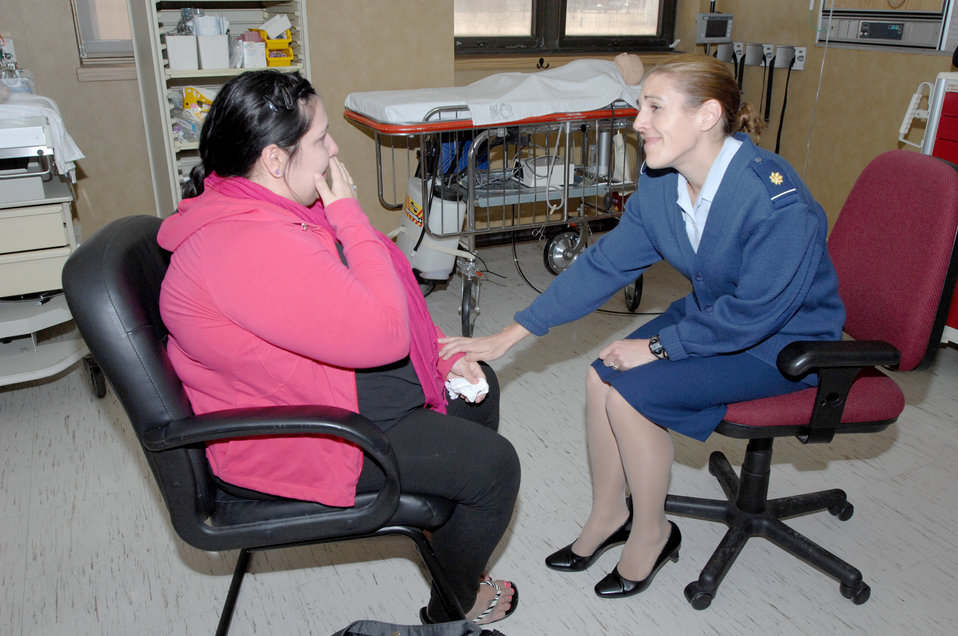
Program Director Development Course

Maj. (Dr.) Molly Tilley comforts Katie Zamudio, a simulated patient, during a training session Sept. 28, 2010, at Wilford Hall Medical Center, at Lackland Air Force Base, Texas. Dr. Tilley is a 59th Medical Wing staff nephrologist.